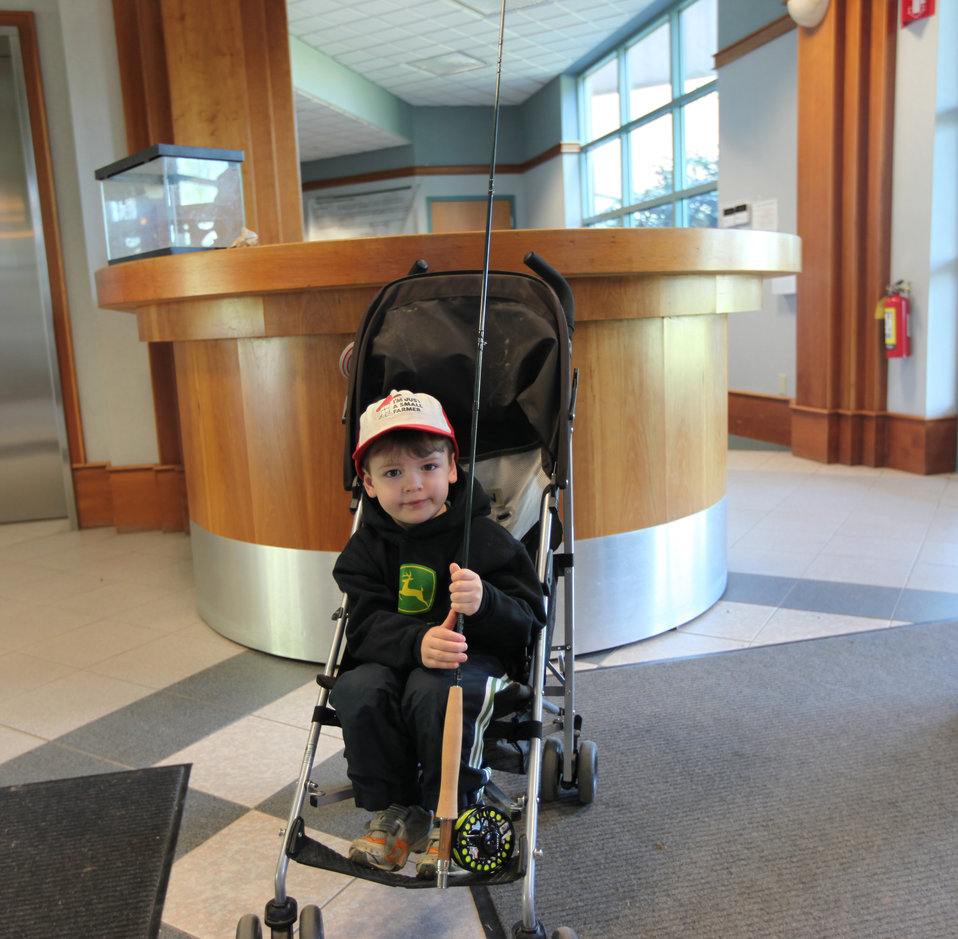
Fishing derby raffle winner!

A winner at the USFWS fishing derby in Hadley, MA on May 7th.